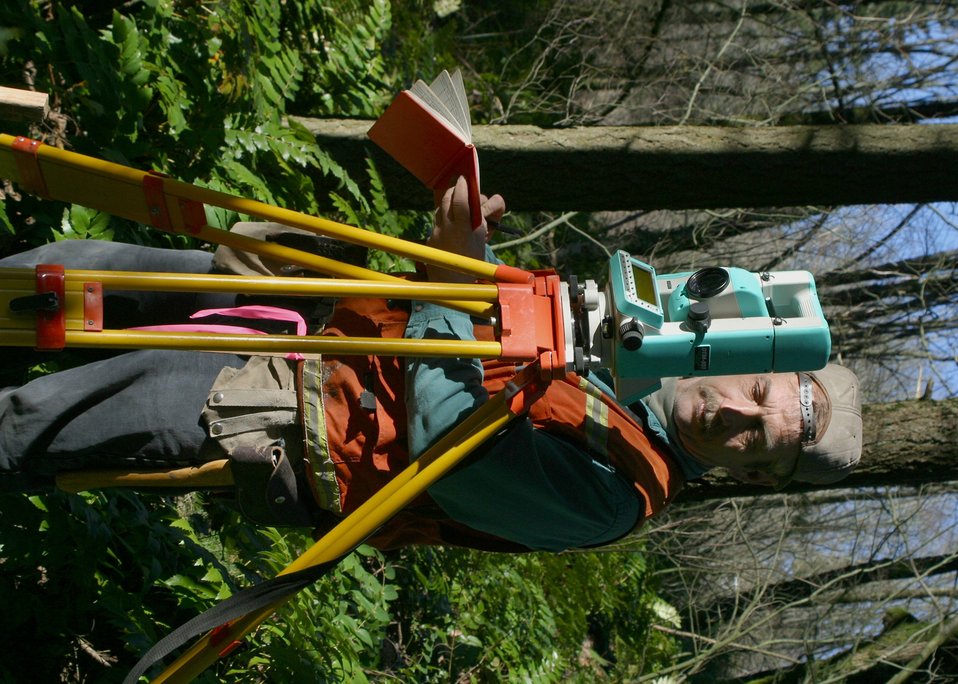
Steve Kaiser Land Surveyor takes field notes near the Willamette Stone survey Marker. BLM is tha only government agency who provides legal public land boundary surveys. 2-7-03 Photo: John Craig